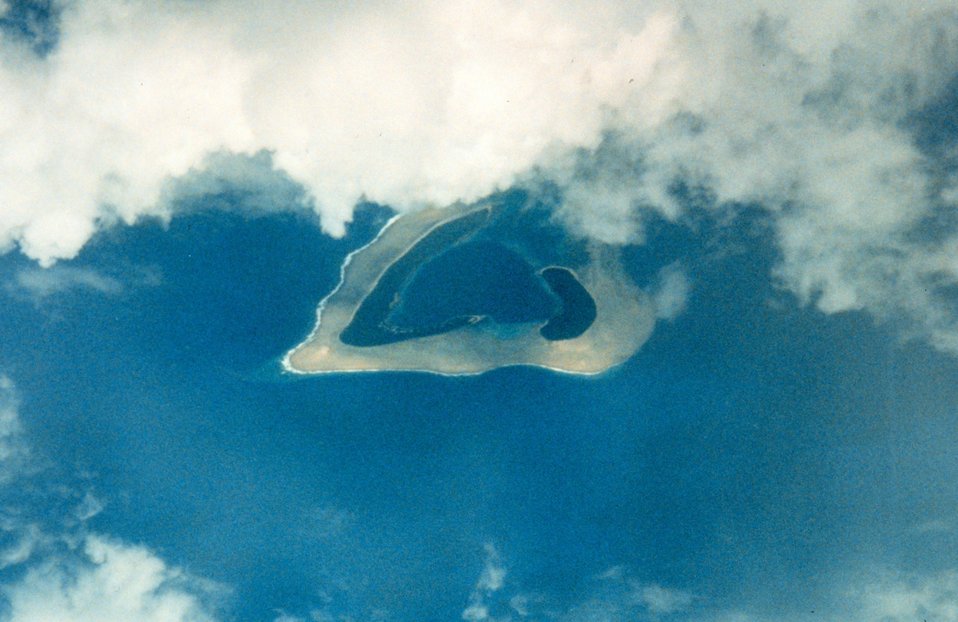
Triangular atoll in the western Pacific